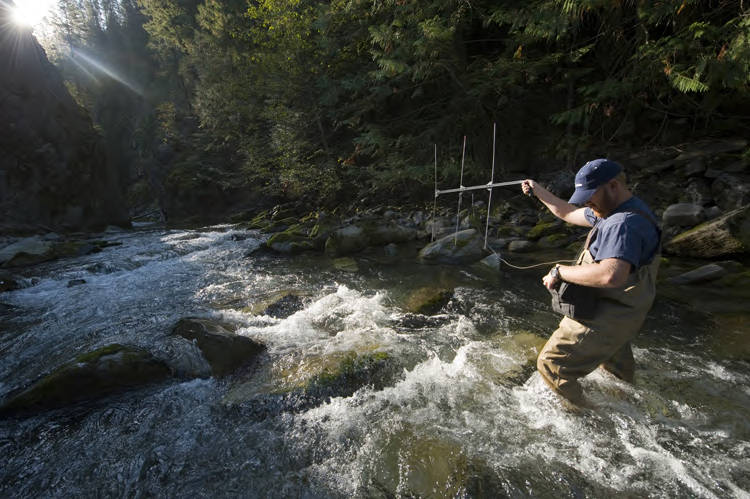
Fisheries technician uses radio antenna to track tagged bull trout

Photo credit: USFWS/Joel Sartore

Well designed monitoring of how species and natural systems are currently reacting to climate impacts and to adaptation actions will be a critical part of reducing uncertainty and increasing the effectiveness of management responses